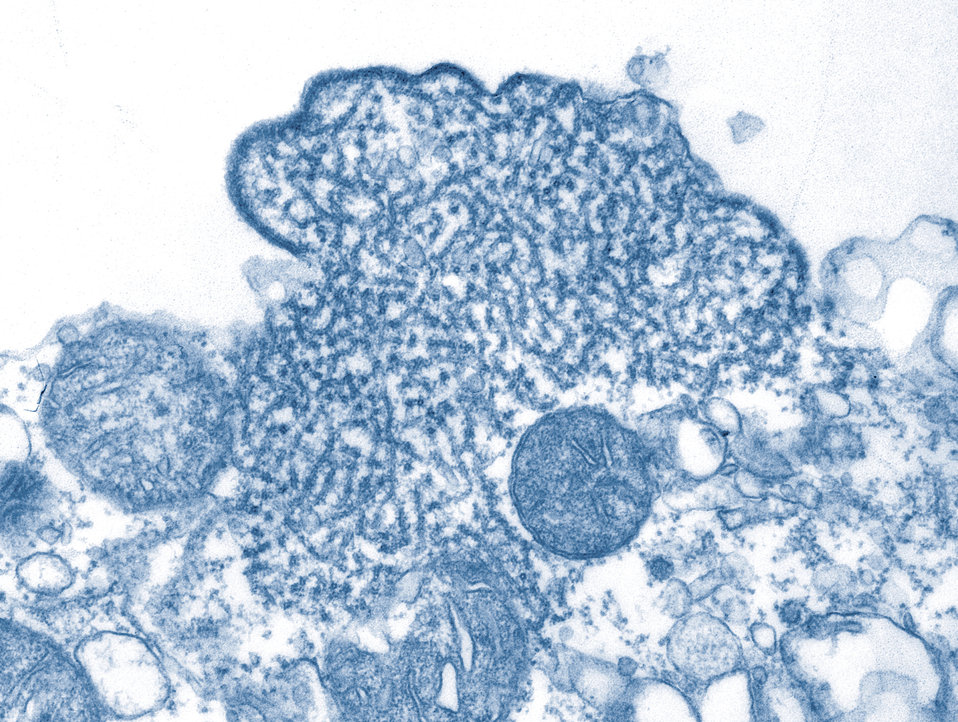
This transmission electron micrograph (TEM) depicted a number of Nipah virus virions that had been isolated from a patient's cerebrospinal fluid (CSF) specimen.Nipah virus is a member of the family Paramyxoviridae, and is related, but not identical to Hendra virus. Nipah virus was initially isolated in 1999 upon examining samples from an outbreak of encephalitis and respiratory illness among adult men in Malaysia and Singapore.Hendra virus, formerly called equine morbillivirus, is also a member of the family Paramyxoviridae. The virus was first isolated in 1994 from specimens obtained during an outbreak of respiratory and neurologic disease in horses and humans in Hendra, a suburb of Brisbane, Australia.